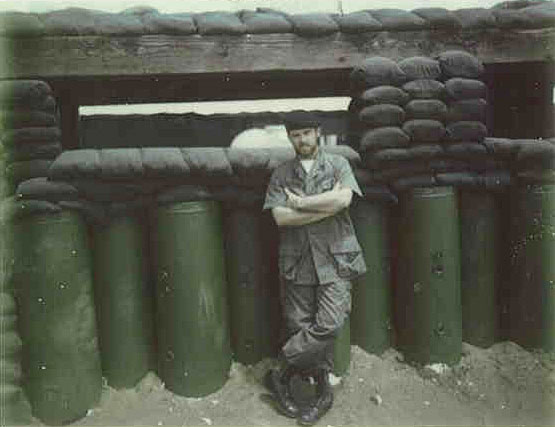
Tom Buckley served in the U.S. Navy from September 1964 to November 1972. He served two tours of duty in Vietnam, the first on an attack aircraft carrier in the Gulf of Tonkin and the second tour in the Mekong Delta on a small Navy base that had river patrol boats, gunship and medical evacuation helicopters, and a Seal team. This experience has served him well as he maneuvers through the wide variety of work the Fish and Wildlife Service has to offer, including a monthlong stint at the Incident Command Center during the Deepwater Horizon oil spill. Buckley now works in Public Affairs in the Southwest Region in Albuquerque, New Mexico.